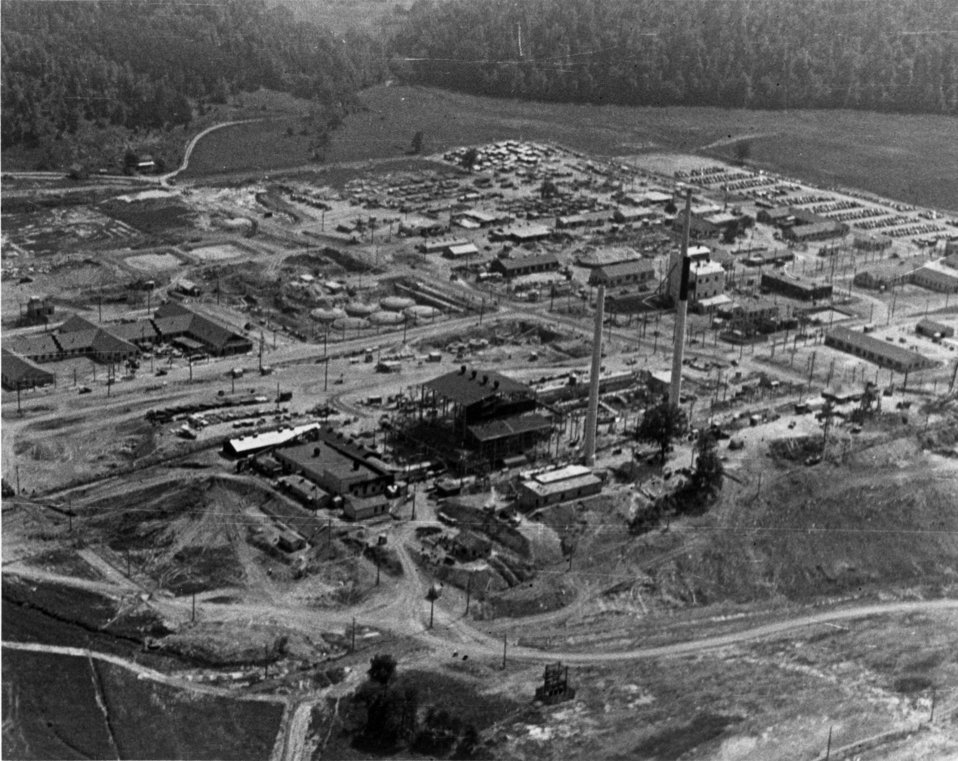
2

roll 76-20 file# 64 8/30/43
X-10 - Aerial